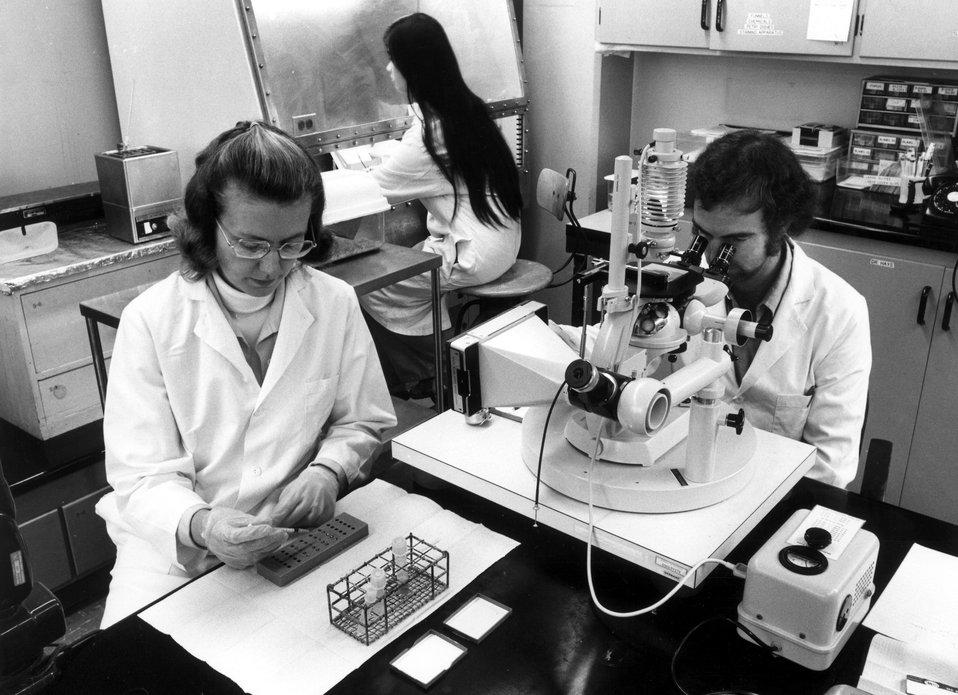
Small numbers of mouse leukemia cells can be isolated and transplanted for study by a technique developed at the Laboratory for Nuclear Medicine and Radiobiology on the UCLA campus.